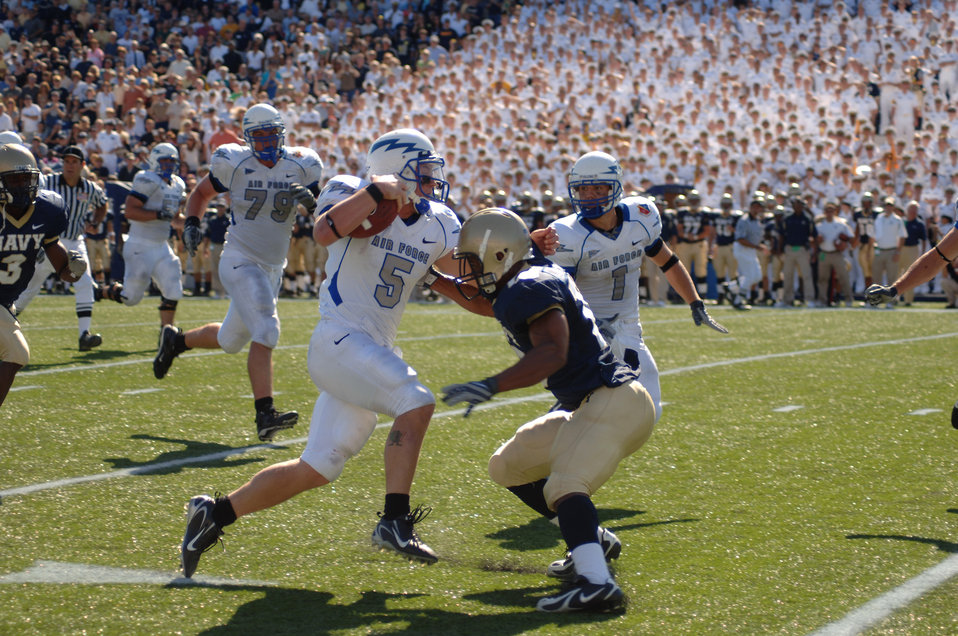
Football: Falcons fall to Navy, 31-20

U.S. Air Force Academy Falcon quarterback Shaun Carney tries to sidestep a Navy defender during Air Force's 31-20 loss to Navy Sept. 29 at Annapolis, Md. The senior signal caller gained 300 total yards to become the program's all-time leader in total yards from scrimmage with 6,780.